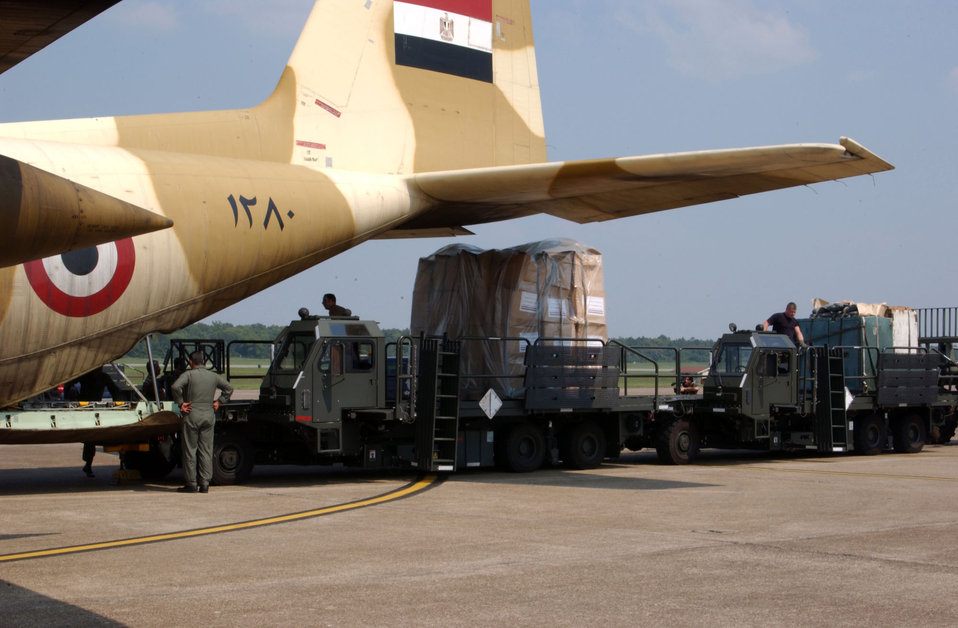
International aid arrives

LITTLE ROCK AIR FORCE BASE, Ark. -- A C-130 Hercules from Egypt lands here Sept. 8 with international aid onboard to help the areas affected by Hurricane Katrina. The C-130 with its cargo is part of the international relief effort to help the United States. The base is the hub for all international supplies.